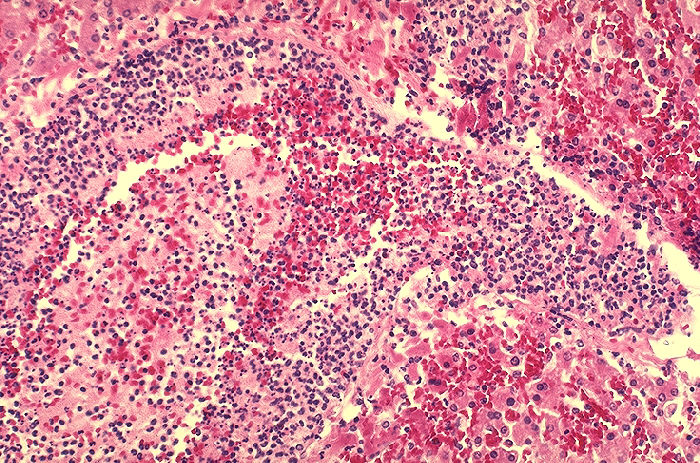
Histopathology of liver in fatal human plague.